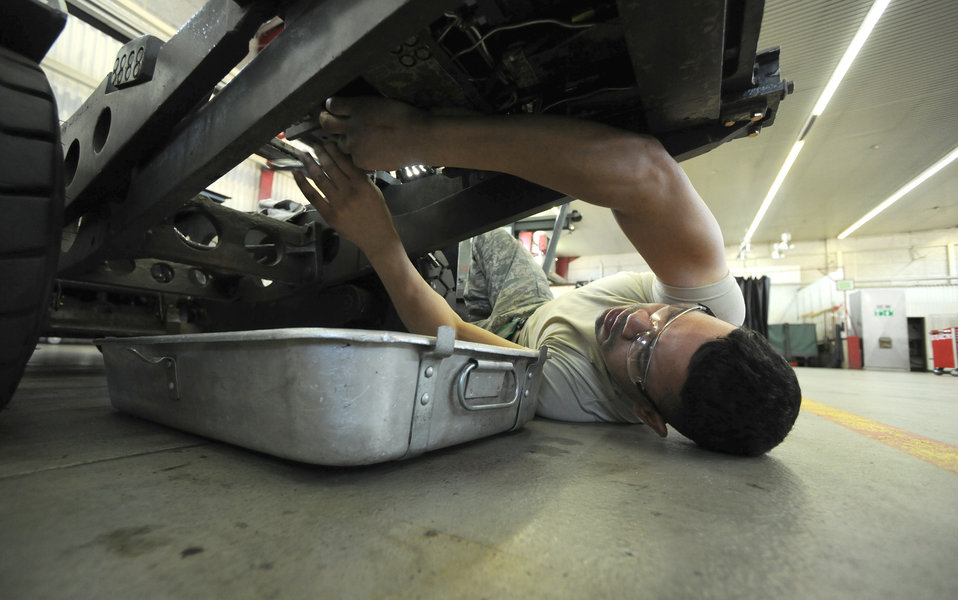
Working on a bomb lift

Airman 1st Class Gary Hutchison removes bolts from a directional control valve on a bomb lift April 7, 2011, at Spangdahlem Air Base, Germany. Airman Hutchison is assigned to the 52nd Equipment Maintenance Squadron as aerospace ground equipment journeyman.